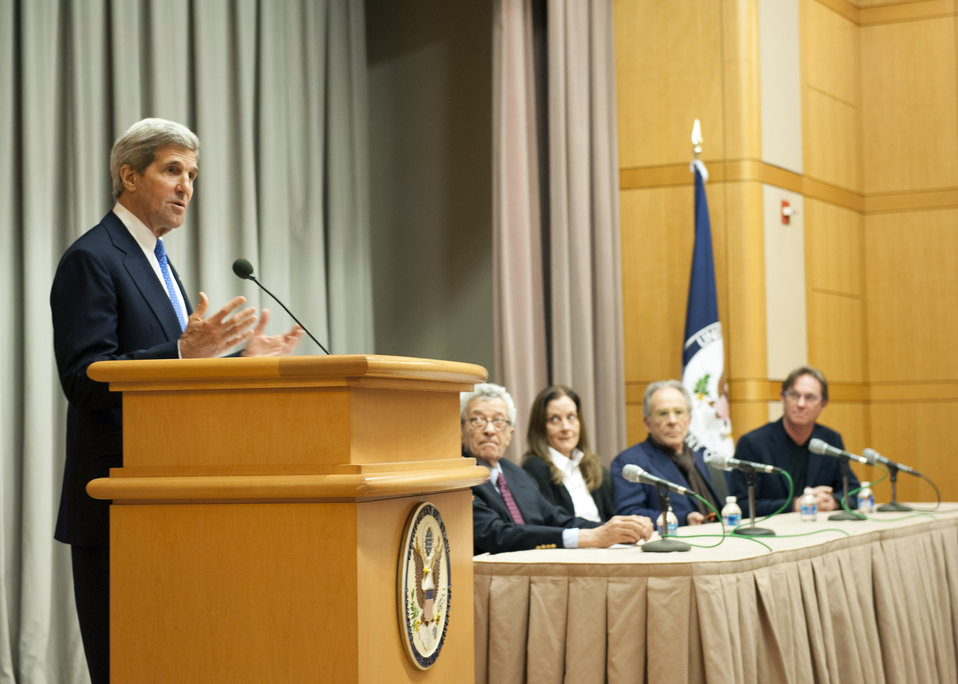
Secretary Kerry Delivers Remarks With 'Camp David' Actors at the Open Forum

U.S. Secretary of State John Kerry delivers remarks after with actors from the play 'Camp David' who are participating in the Secretary’s Open Forum at the U.S. Department of State in Washington, D.C., on April 29, 2014.